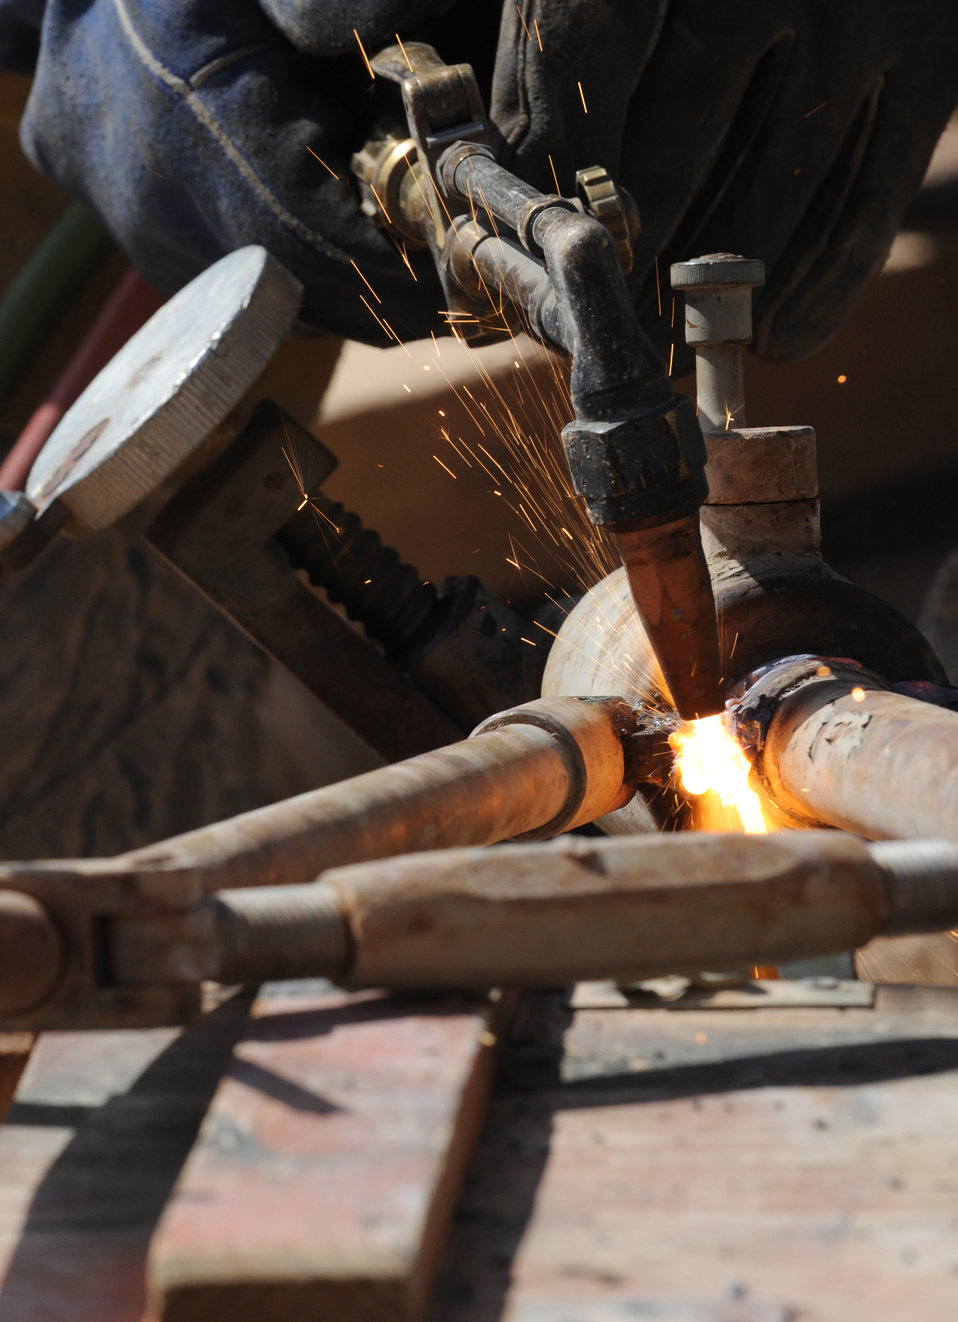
Security forces destroy Iraqi weapons for base security

Tech. Sgt. Roy Hurd uses an oxy-acetylene torch to cut up enemy weapons at Joint Base Balad, Iraq, March 18. The weapons were turned in by units and are being destroyed so they cannot be used against coalition forces or Iraqis. Sergeant Hurd is a 332nd Expeditionary Civil Engineer Squadron structural journeyman.